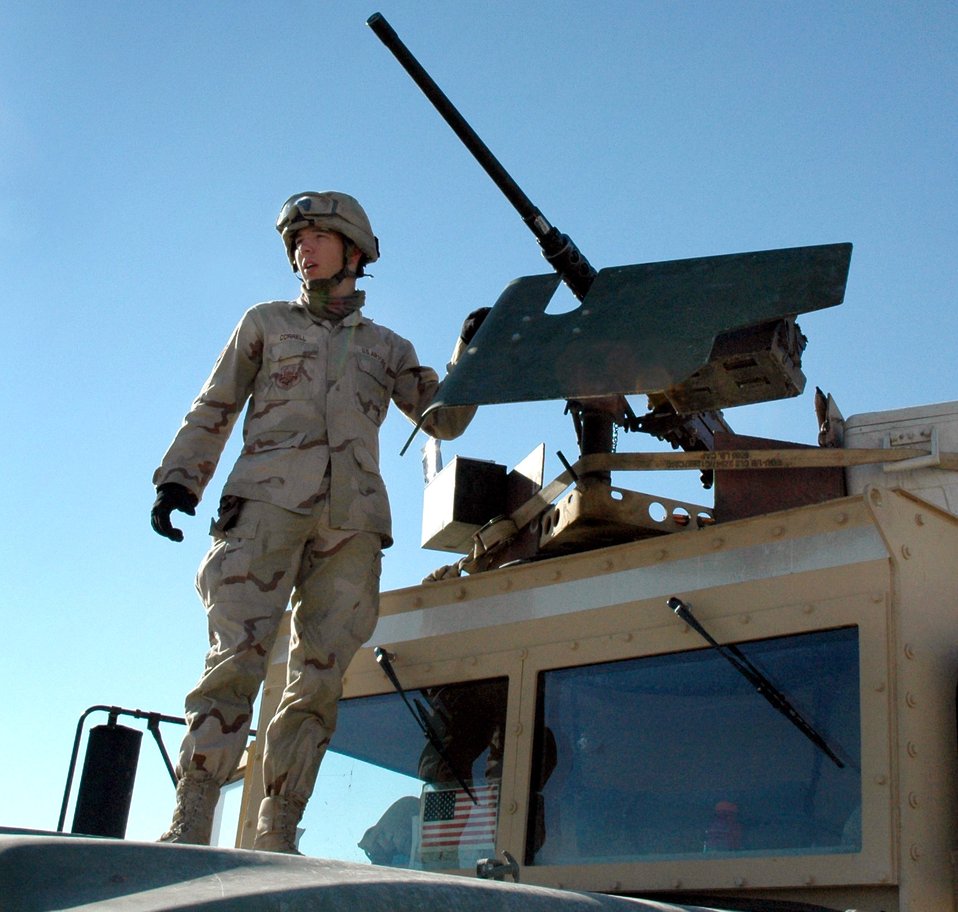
Escort

TIKRIT, Iraq -- Senior Airman James Correll stands atop a 5-ton truck as he prepares to set out on a convoy from forward operating base Speicher. Airmen with the 732nd Expeditionary Logistics Readiness Squadron here provide armed escort of combat logics patrols to ensure passengers and cargo safely reach their destinations throughout Iraq.